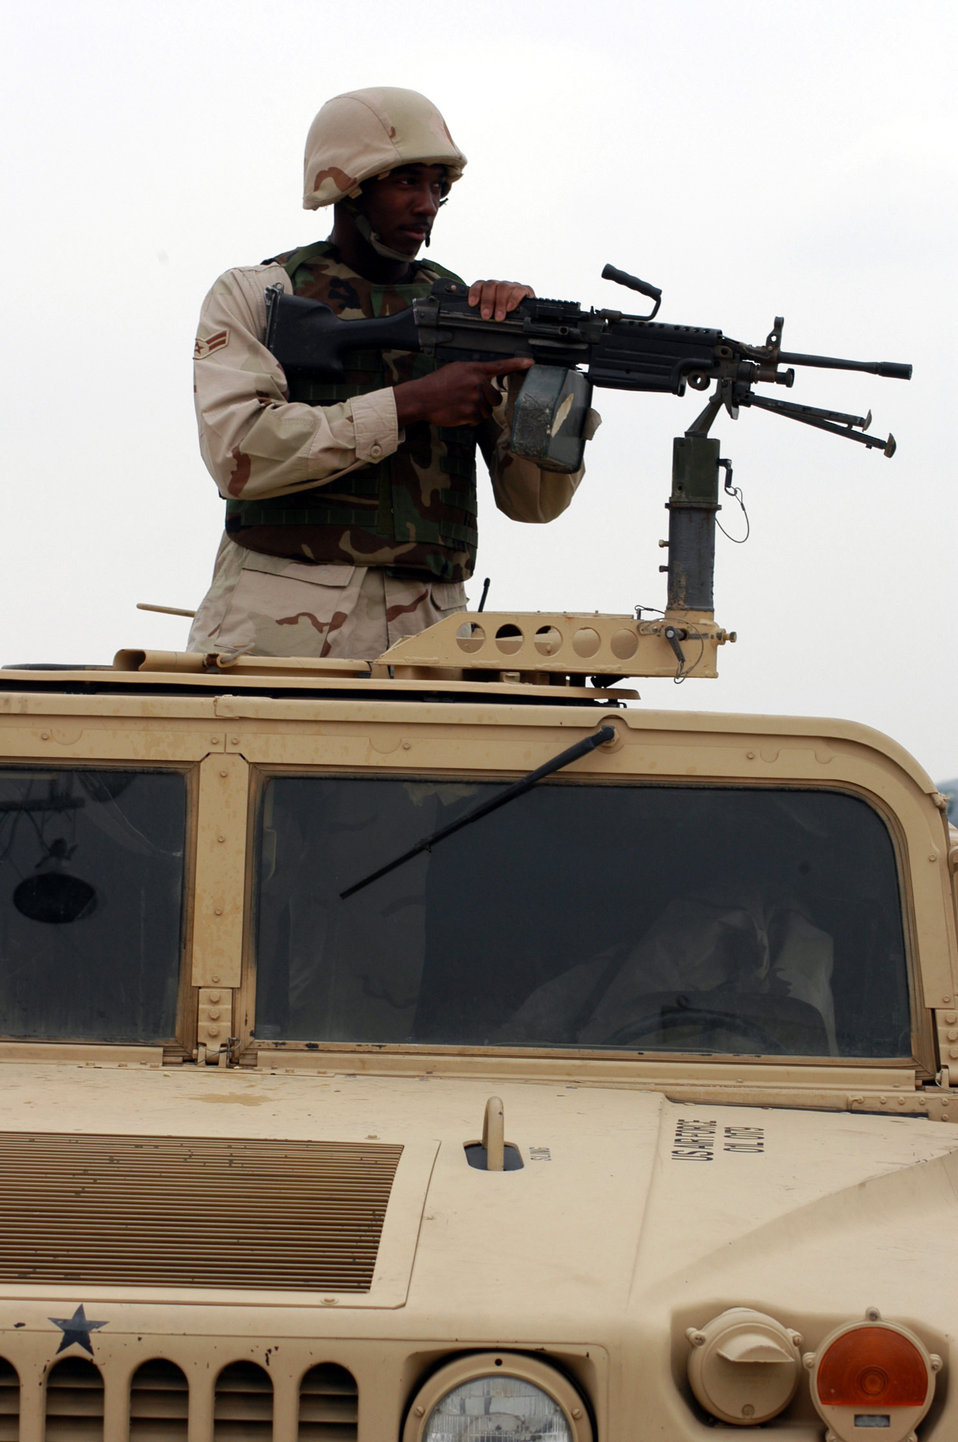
Ever vigilant

KARSHI-KHANABAD AIR BASE, Uzbekistan -- Airman 1st Class Quentin Norris stands ready at his machine gun during a security forces training exercise here Feb. 18. Airman Norris is a security forces Airman with the 416th Expeditionary Mission Support Squadron.